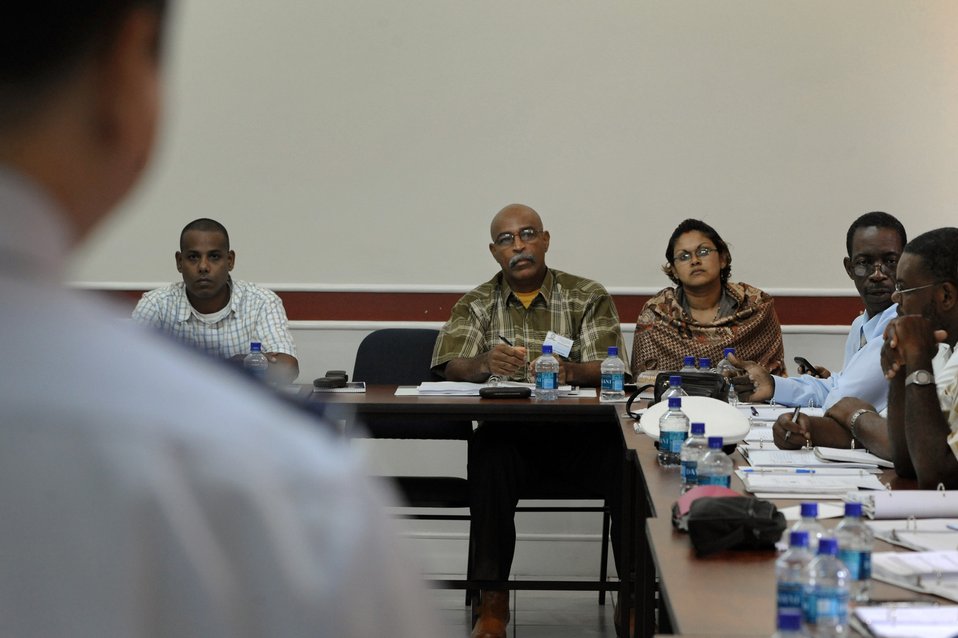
DIMO

Local officials attend a disaster planning and mass casualty response class for primary care providers July 20, 2010, in Port of Spain, Trinidad and Tobago. The class is taught by the Defense Institute for Medical Operations, United States Air Force School of Aerospace Medicine, at Brooks City-Base, Texas.